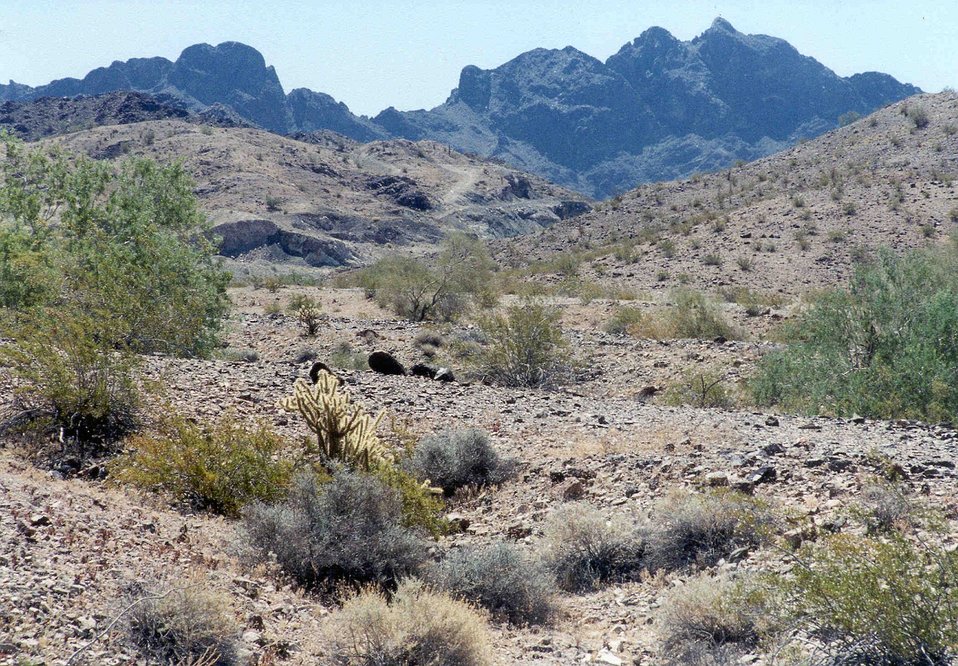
Peaceful surroundings in Trigos Wilderness Area